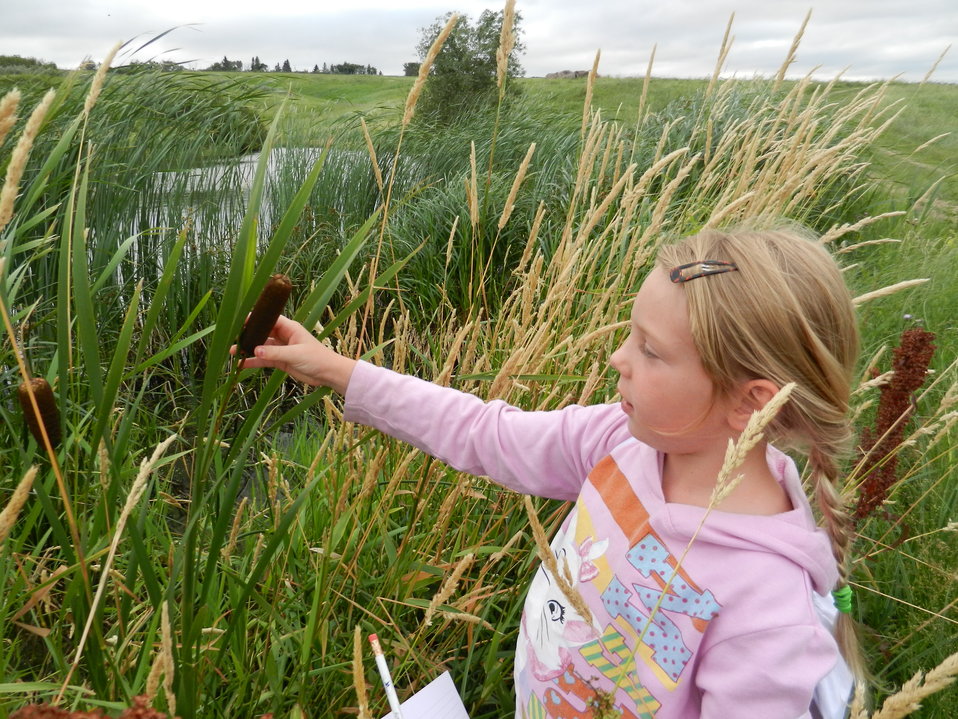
Cattails

Scoping out the cattails up close on a nature hike in Des Lacs National Wildlife Refuge in North Dakota.